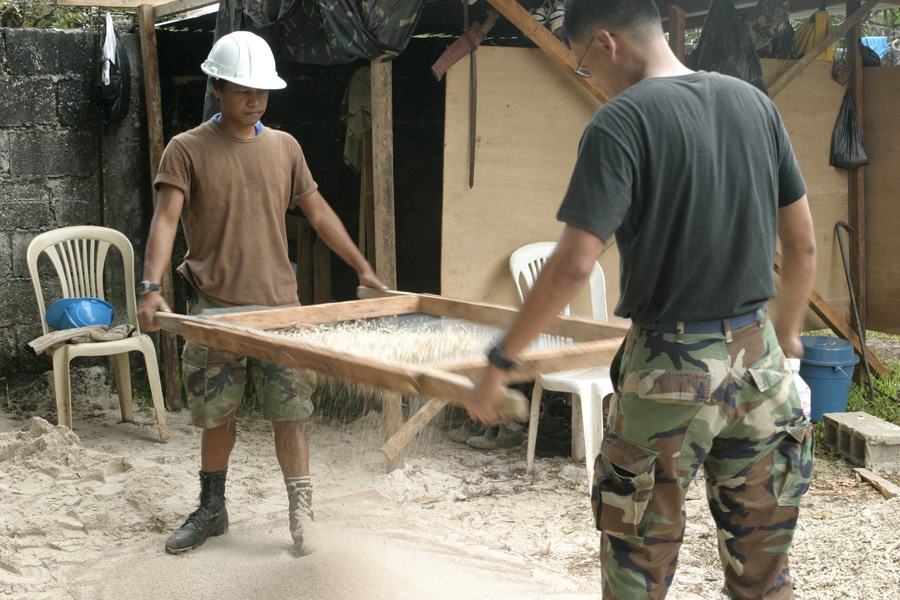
Balikatan 2006

JOLO, Philippines (AFPN) -- An Armed Forces of the Philippines engineer and an Airman work at the construction site of a three-room school, an addition to the existing Sulu High School, Feb. 20. This is one of several civil action programs taking place during Exercise Balikatan 2006.